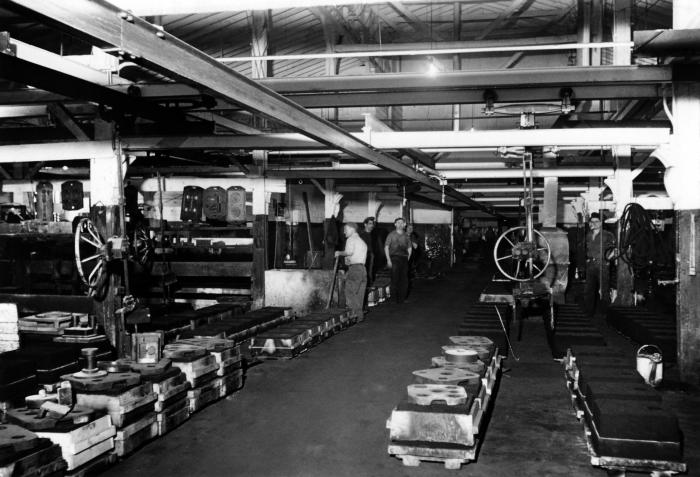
This historical photograph is from the National Institute for Occupational Safety and Health (NIOSH) of the CDC. The image is of men working in a Milan, Michigan foundry after it was cleaned and painted. Compare this photo with PHIL # [no. 561] of the foundry before cleaning and painting.